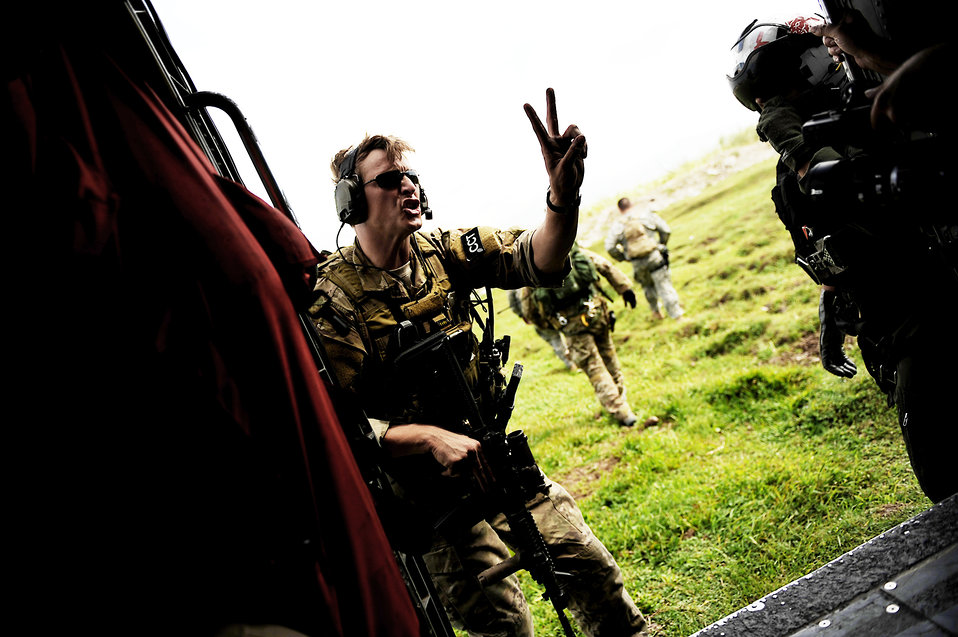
Joint team conducts drop zone survey

A U.S. Air Force combat controller signals to other controllers and U.S. Army pathfinders at a drop zone survey outside Port-au-Prince, Haiti, Jan. 24, 2010, during Operation Unified Response.